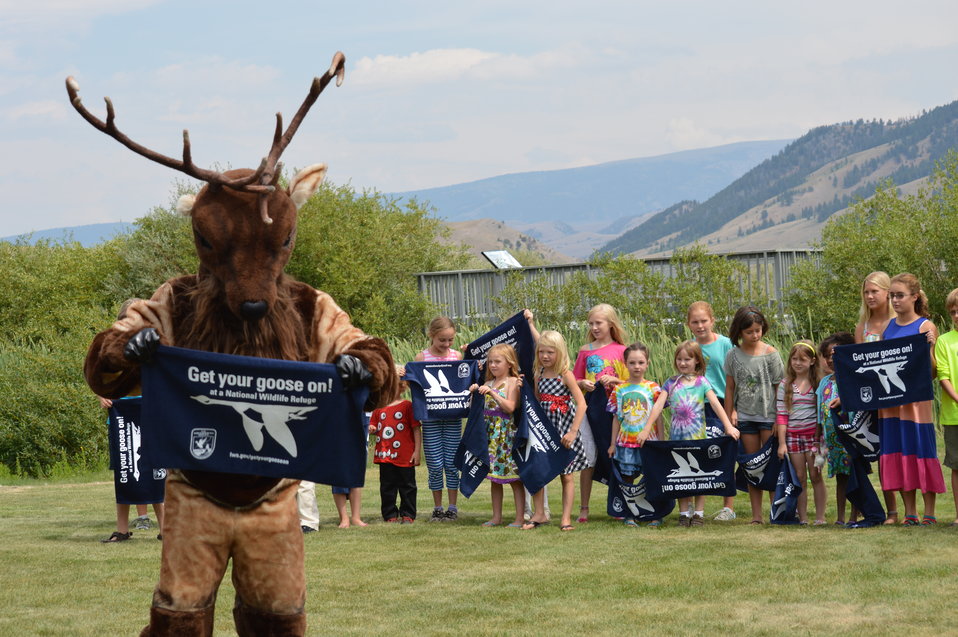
'Get Your Goose On' National Elk Refuge Style

A National Elk Refuge mascot joined a group of children to show the public how to 'Get Your Goose On!' with style.